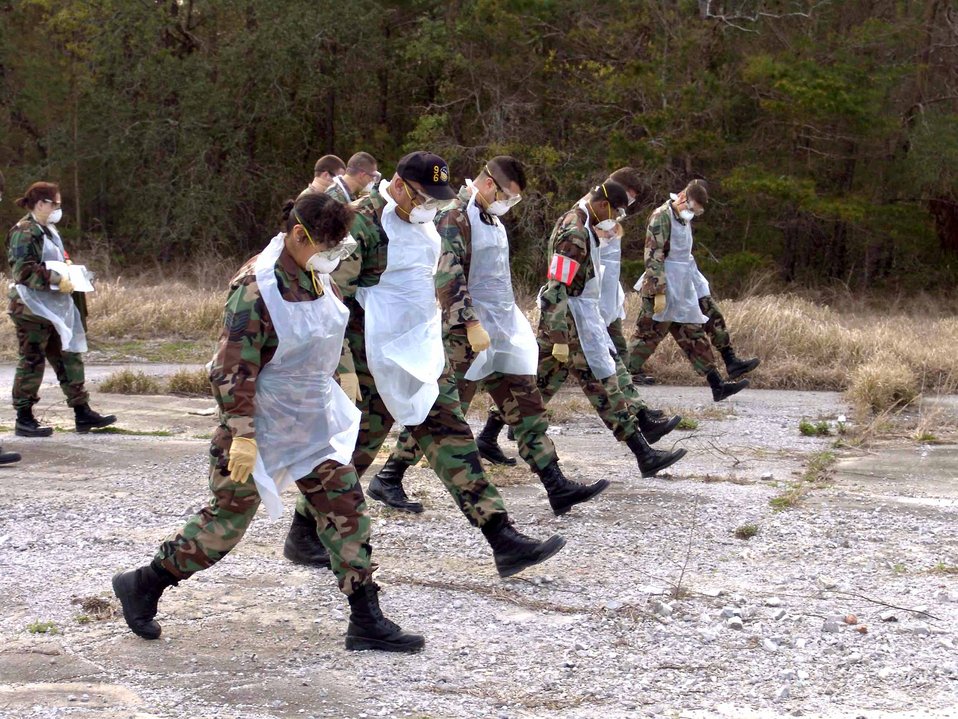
SAR teams pay close attention to detail

EGLIN AIR FORCE BASE, Fla. -- A search and recovery team methodically walks across a search area one step at a time looking for anything out of place during a training exercise here. The team is made up of at least 26 Airmen who strive to find anything out of place in the aftermath of an accident.